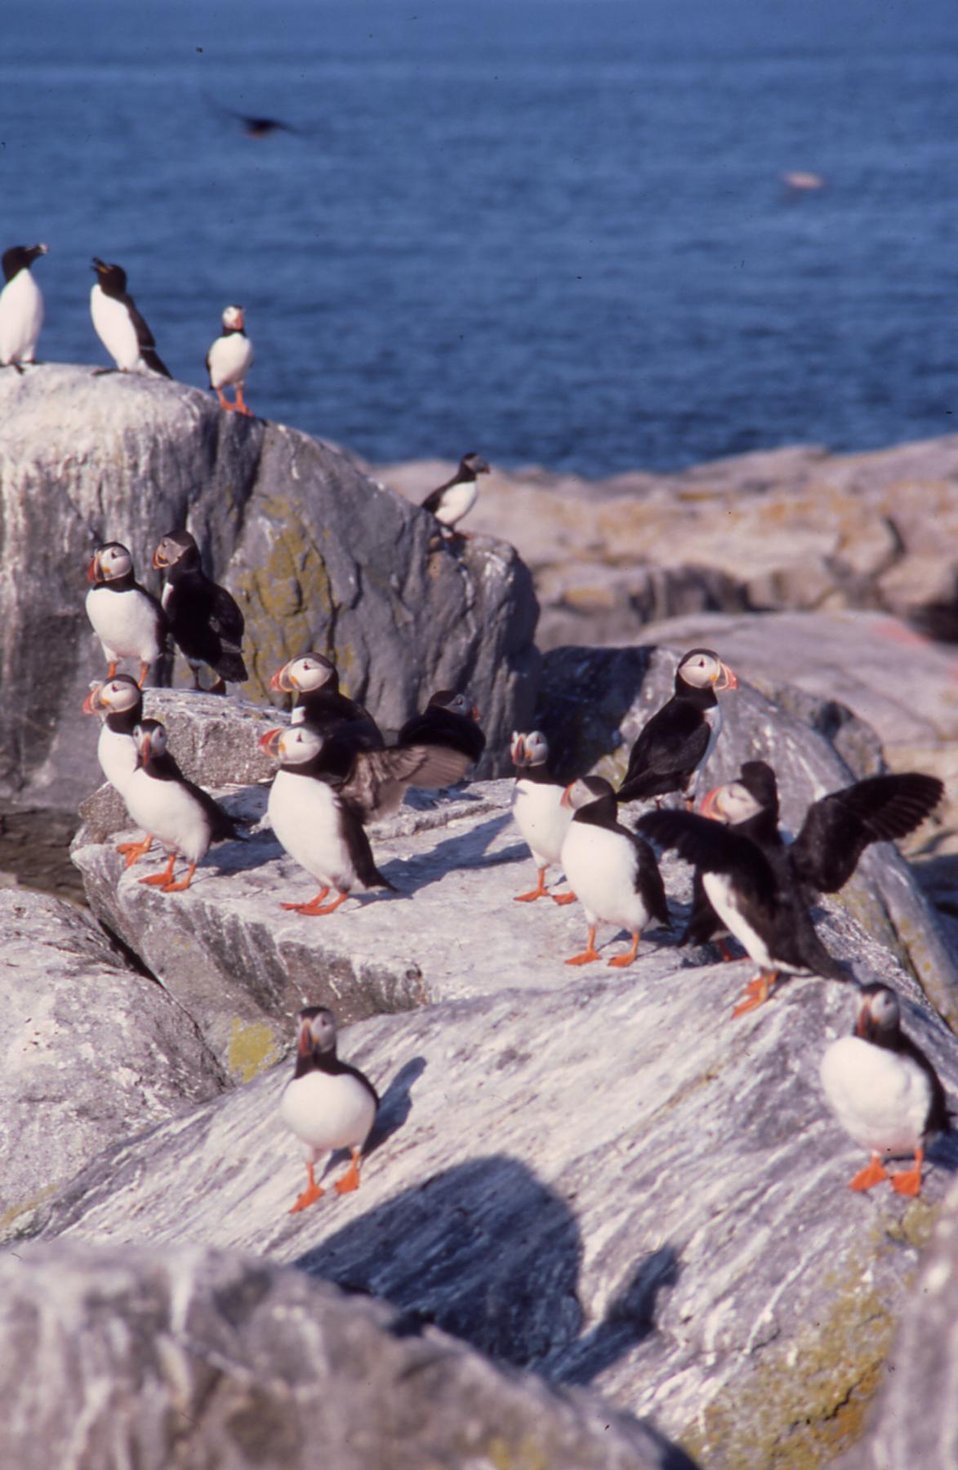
Atlantic Puffins and razorbills on Seal Island

Maine Coastal Islands National Wildlife Refuge.